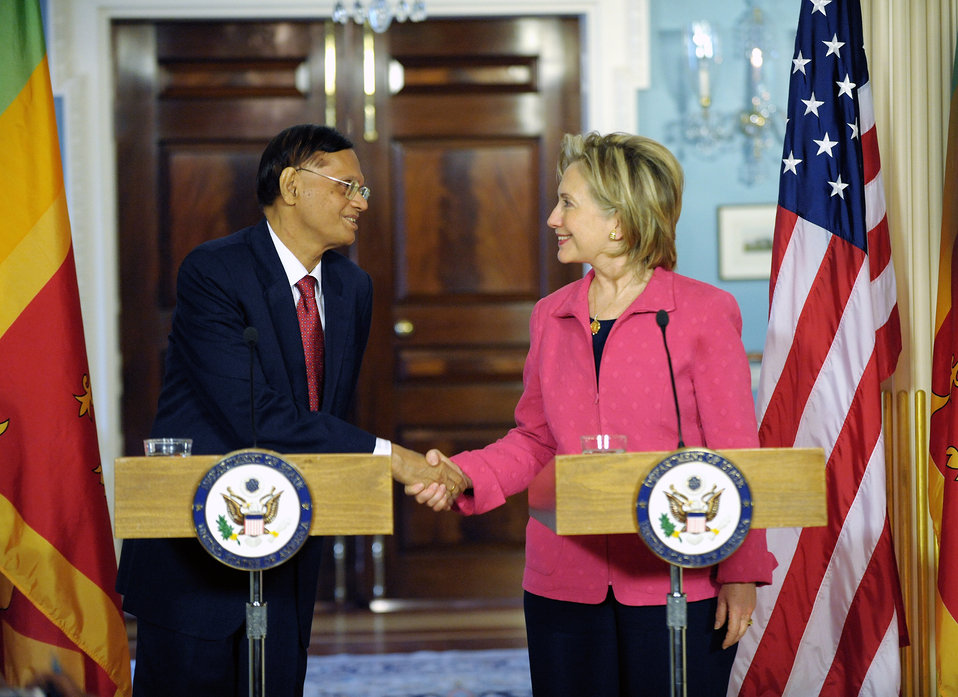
Secretary Clinton Shakes Hands With Sri Lanka Minister of External Affairs G.L. Peiris

U.S. Secretary of State Hillary Rodham Clinton shakes hands with Sri Lanka Minister of External Affairs G.L. Peiris after a bilateral meeting and a joint press availability in the Treaty Room at the U.S. Department of State in Washington, D.C., on May 28, 2010.